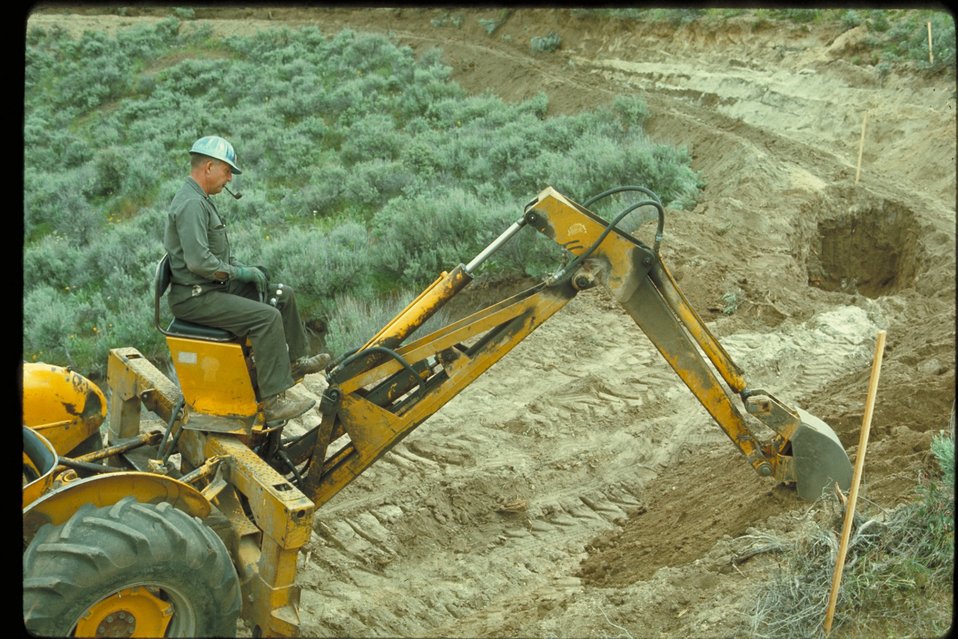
Trenching at 8th St Road Hulls Gulch Boise Front Four Rivers Field Office LSRD Lower Snake River District